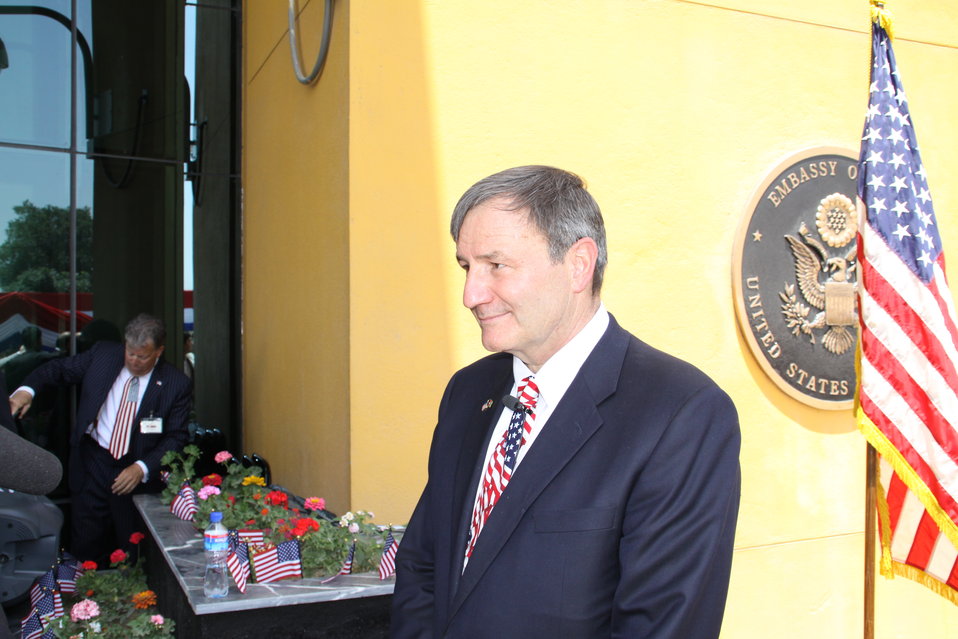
Kabul Official July 4th Celebration